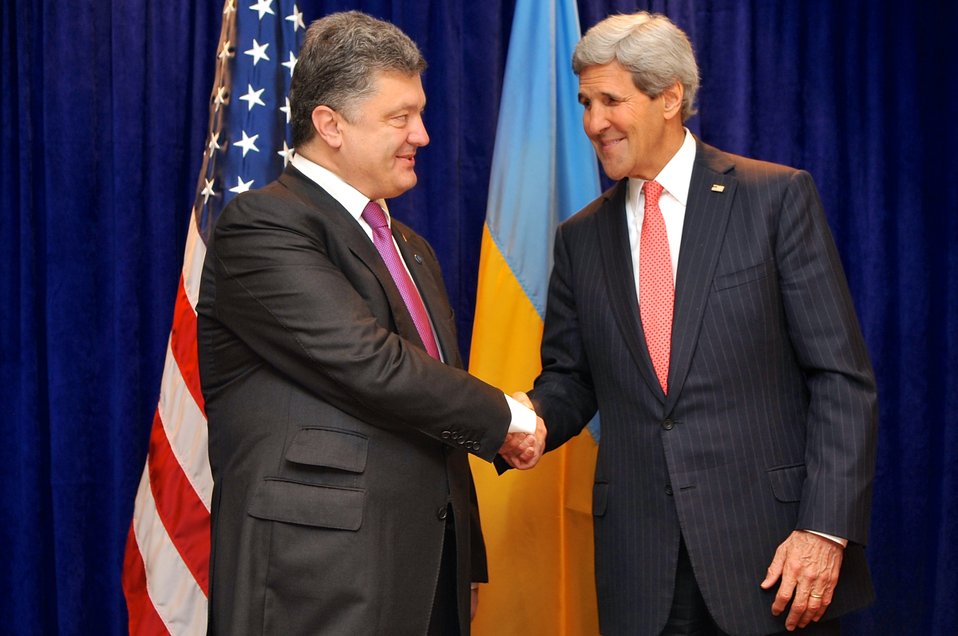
Secretary Kerry Shakes Hands With Ukrainian President-elect Poroshenko Before Meeting in Warsaw

U.S. Secretary of State John Kerry and Ukrainian President-elect Petro Poroshenko shake hands after addressing reporters before a discussion that preceded Poroshenko's meeting with President Obama in Warsaw, Poland, on June 4, 2014.